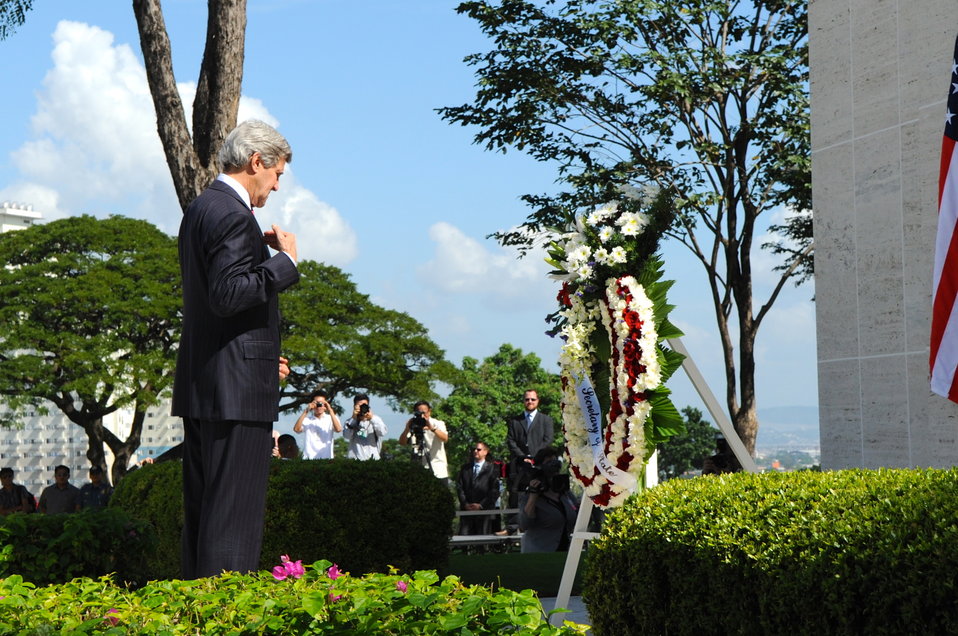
Secretary Kerry Crosses Himself During a Wreath-Laying Ceremony in Manila

U.S. Secretary of State John Kerry crosses himself during a moment of reflection as part of a a wreath-laying ceremony at the American Cemetery in Manila, Philippines, on December 17, 2013. A total of 17,201 graves mark the 152 acres the cemetery occupies, most of the dead who are buried there lost their lives in battles in New Guinea and the Philippines.